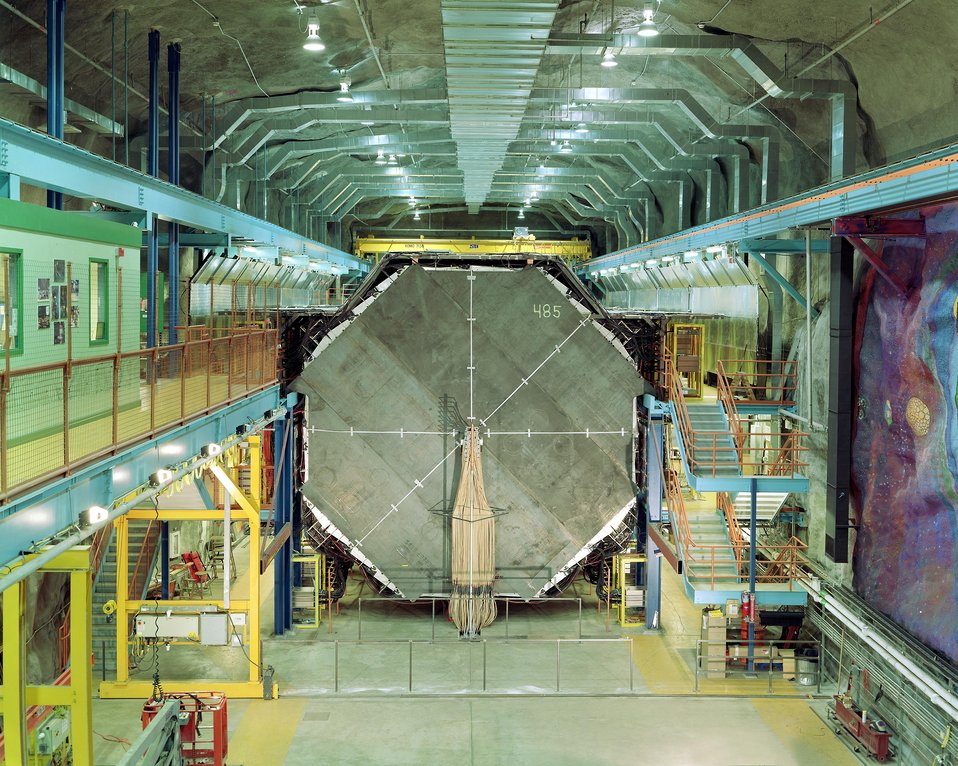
THE MAIN INJECTOR NEUTRINO OSCILLATION SEARCH DETECTOR IN THE SOUDAN UNDERGROUND LAB, MN.

THE MINOS DETECTOR, BUILT IN COLLABORATION WITH DOE AND INTERNATIONAL SCIENTISTS, WEIGHING 6000 TONS, IS INSTALLED IN A CAVERN 1/2 MILE UNDERGROUND IN THE SOUDAN UNDERGROUND LAB IN MINNESOTA. THE DETECTOR IS RECORDING COSMIC RAY SHOWERS PENETRATING THE EARTH. THE NEXT PHASE WILL INVOLVE CATCHING NEUTRINOS CREATED AT FERMILAB'S MAIN INJECTOR ACCELERATOR. THE NEUTRINOS WILL TRAVEL 450 MILES THROUGH THE EARTH, WITHOUT A TUNNEL NEEDED. PHYSICISTS WILL USE THE MINOS DETECTOR TO EXPLORE THE PHENOMENON OF NEUTRON MASS.